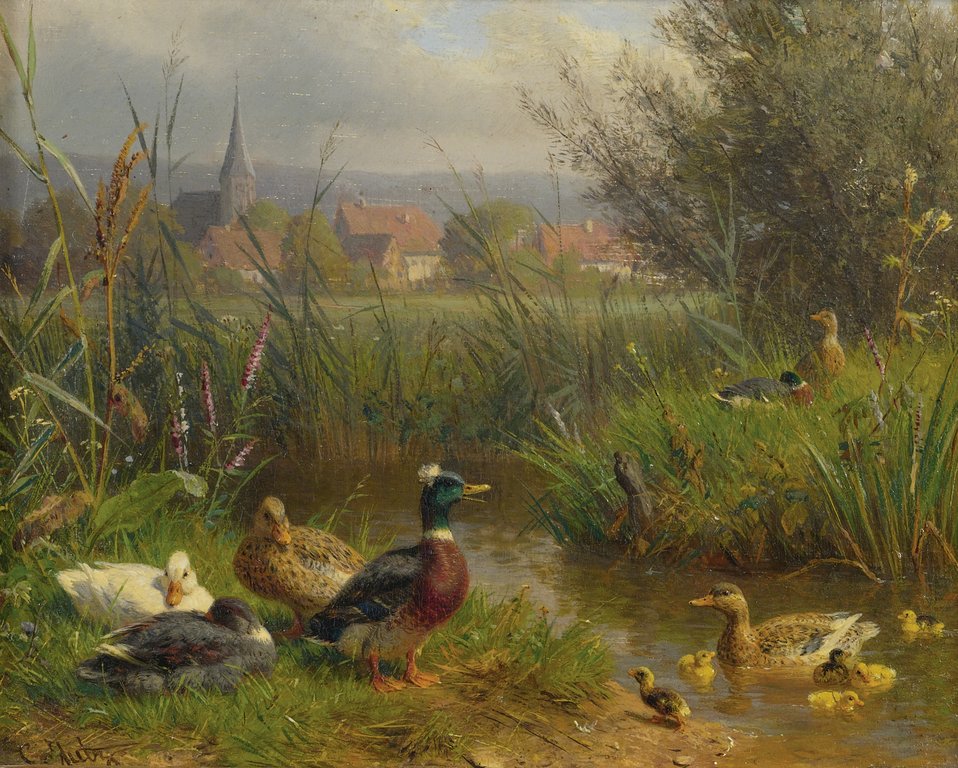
Deutsch: Enten am Bach. Öl auf Holz, 12.7 x 16.3 cm